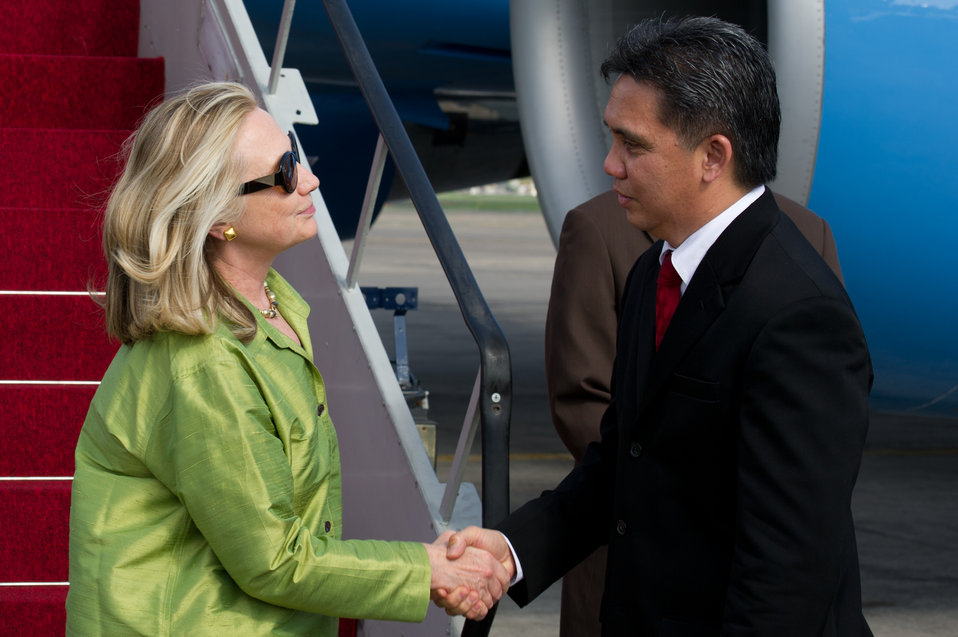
Secretary Clinton Is Greeted By Indonesian Director of Protocol Kandou

U.S. Secretary of State Hillary Rodham Clinton is greeted by Indonesian Director of Protocol Harry Kandou upon her arrival to Bali, Indonesia, for the ASEAN and East Asian Summits on November 17, 2011.